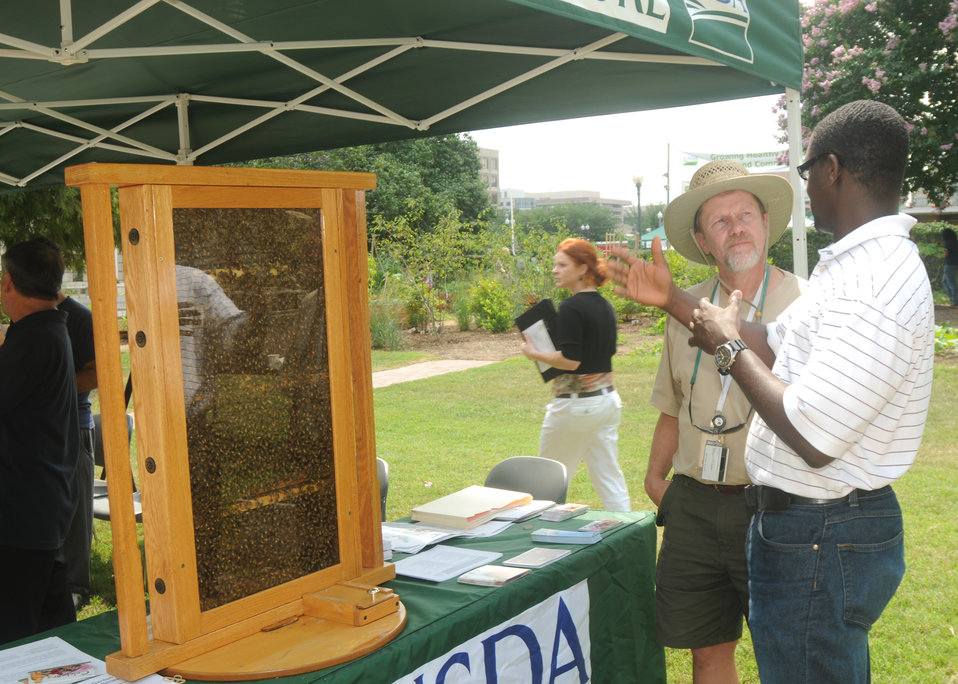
USDA employees volunteer in the People's Garden by discussing pollinators during a Healthy Garden Workshop.